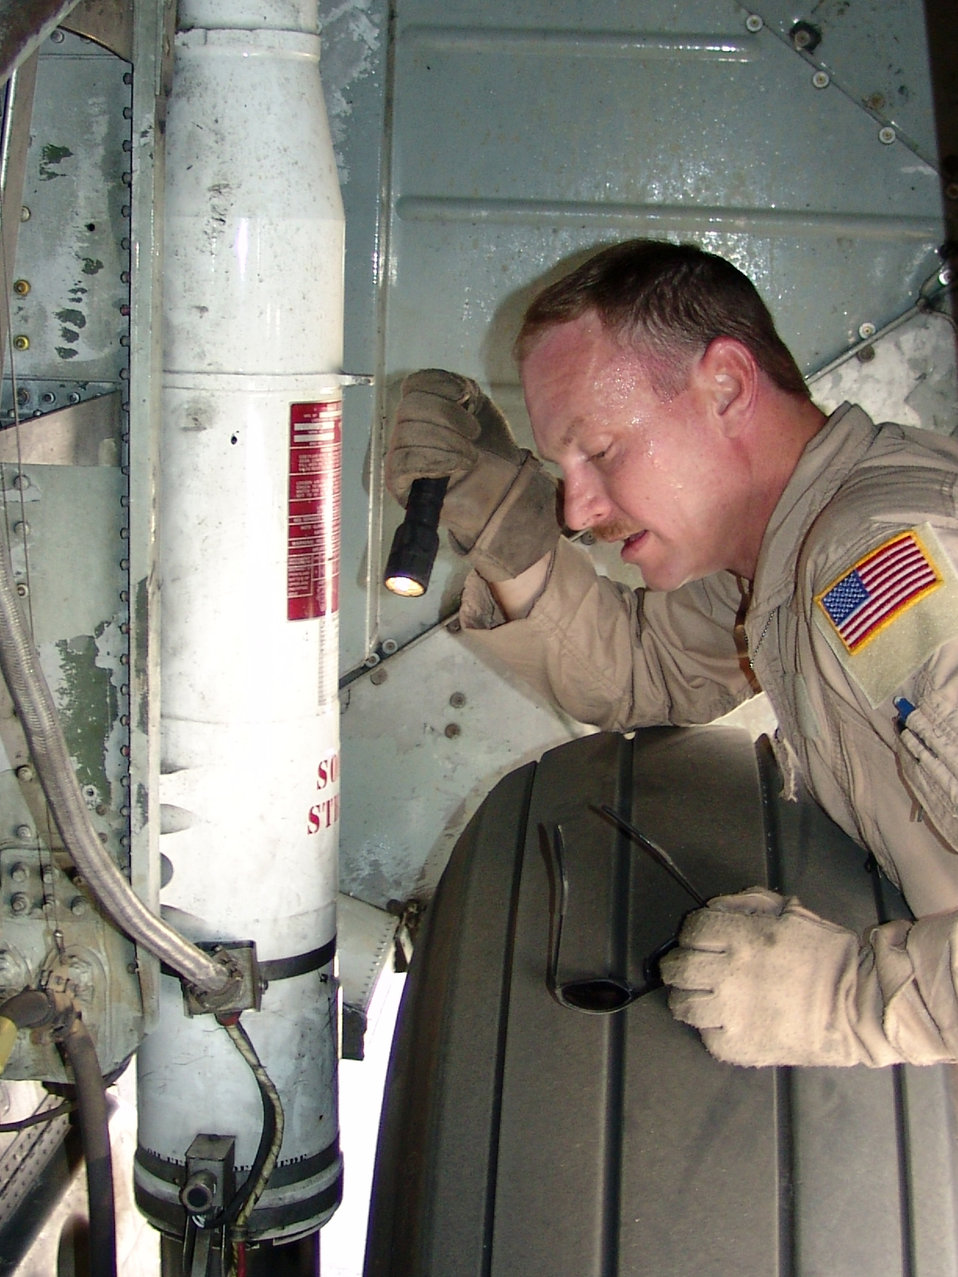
Mission time

SOUTHWEST ASIA -- Tech. Sgt. Bryan Setzer inspects the left wheel well of a C-130 Hercules at a forward-deployed location. He is a flight engineer with the 737th Expeditionary Airlift Squadron and is deployed from Pope Air Force Base, N.C.